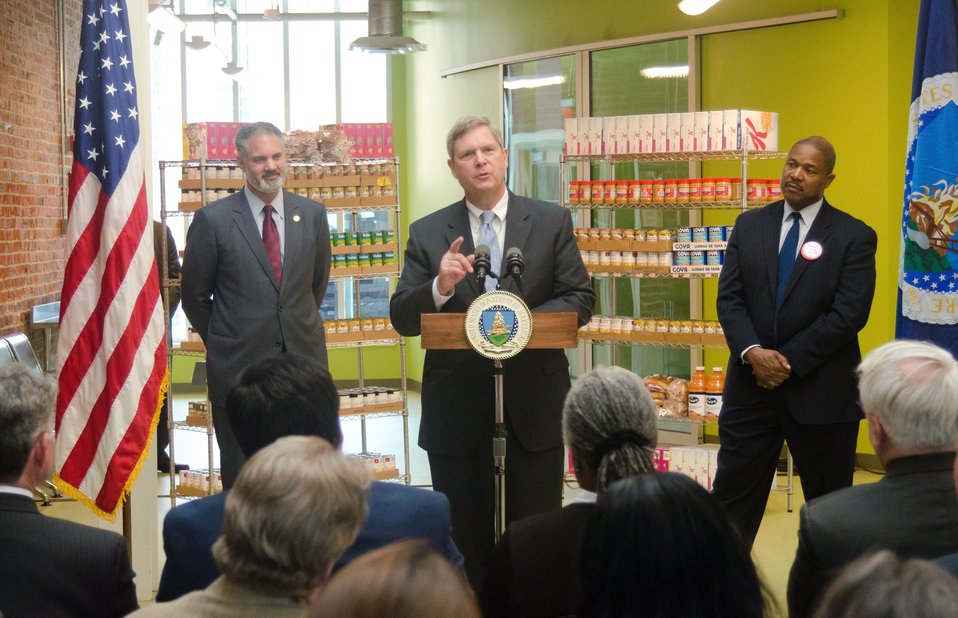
Agriculture Secretary Tom Vilsack Thursday (center), corperation for natinal and comunity Service CEO Patrick Corvington and Bread for the City President George Jones announced at Bread for the City, on April 29, 20ll in Washington, DC, that the USDA will become champions to end hunger and innovative partnerships to address hunger, especially among children USDA Photo by Lance Cheung.